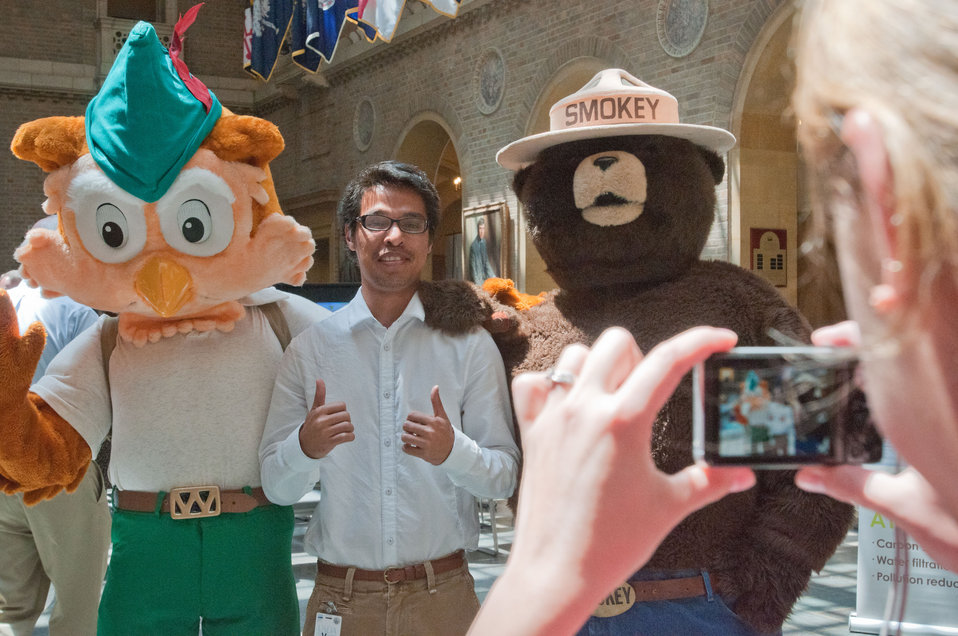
Woodsy Owl (left), Smokey Bear (right) and a guest at the International Year of Forests (IYOF) celebration on Friday, June 3, 2011 on the Patio of the Whitten Building, U.S.Department of Agriculture in Washington, DC.